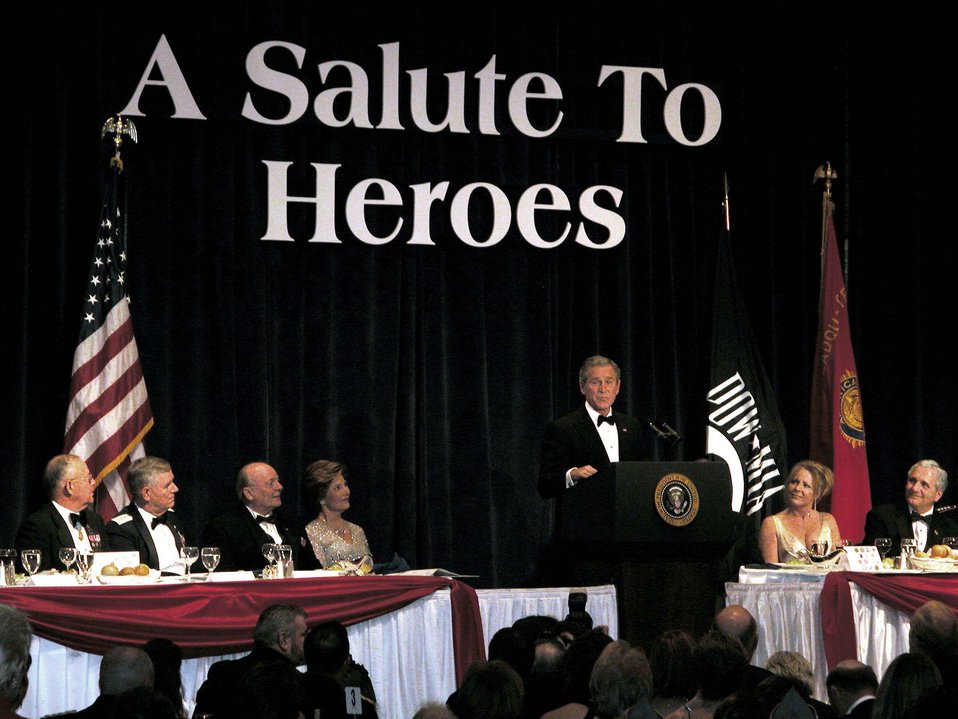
President thanks veterans for service during inaugural ball

WASHINGTON -- President Bush addresses supporters at the